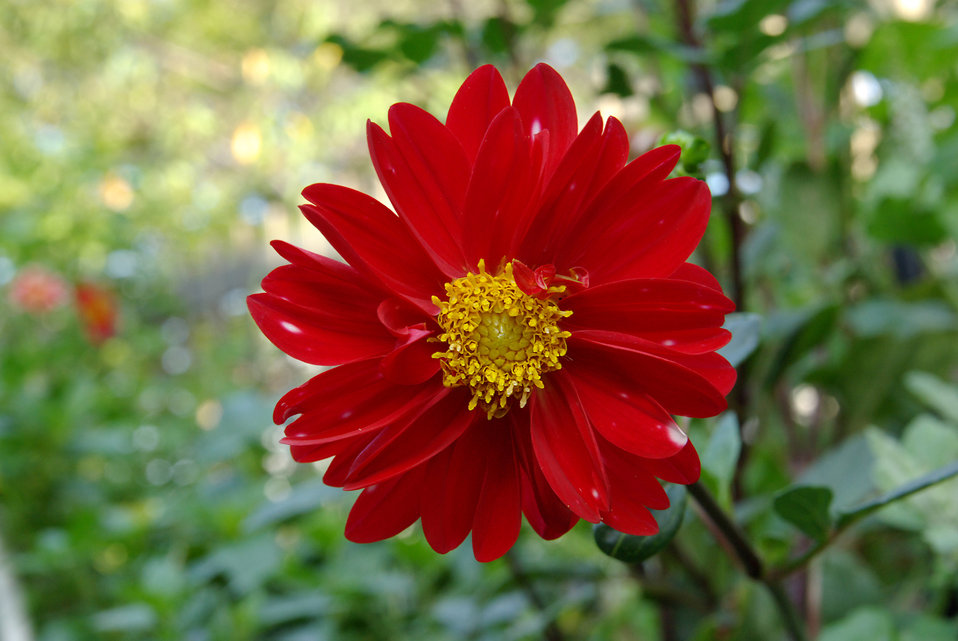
Name Dahlia Family Asteraceae Dahlia 日本語: ダリア
This picture was taken at Osaka, Japan. Camera Details:
Camera: PENTAX K10D
Lens: SIGMA 17-70mm F2.8-4.5 DC MACRO